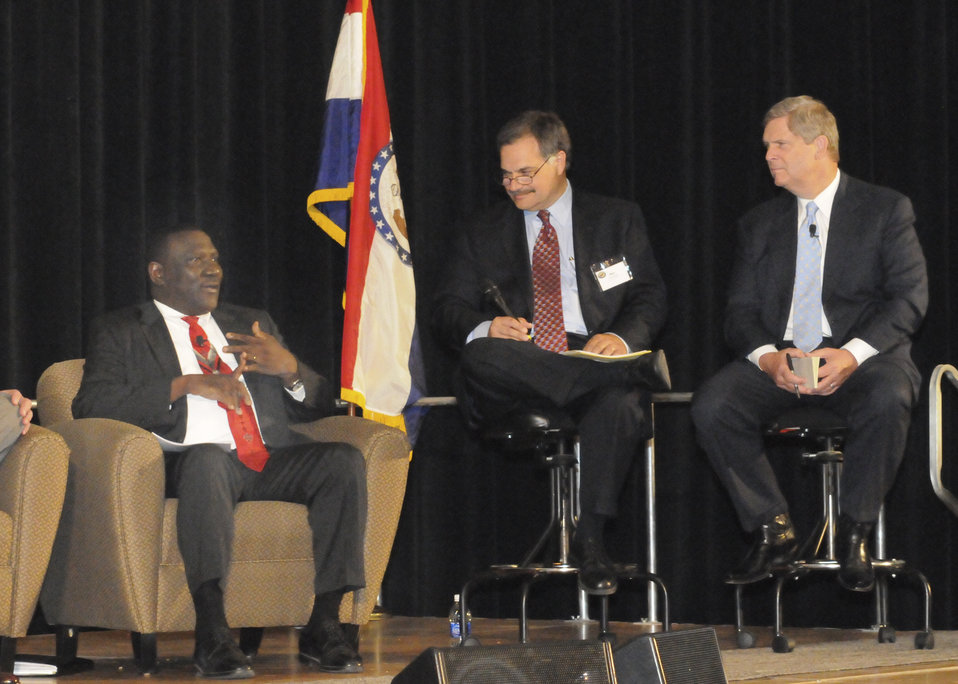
A Dialogue on Rural America was the first discussion panel held at the National Rural Summit held at Jefferson College in Hillsboro, MO., on Thursday, June 3, 2010. Agriculture Secretary Tom Vislack (right) and Agriculture Broadcaster at WGN radio Max Armstrong listen to comments from Mayor of Philadelphia, Mississippi James Young USDA photo 10di1386-0199